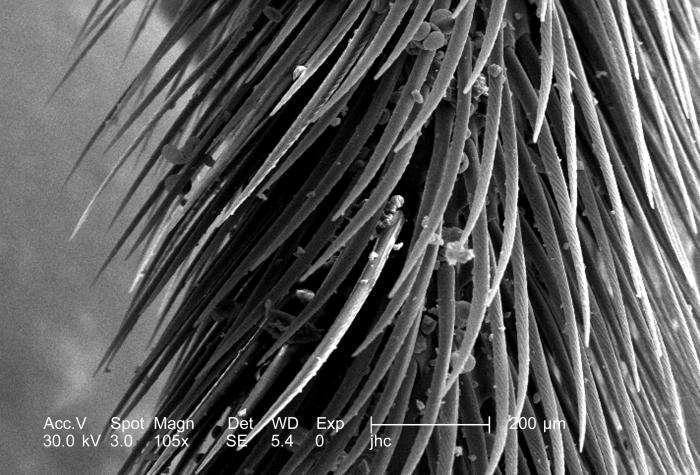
At a low magnification of 105x, this scanning electron micrograph (SEM) depicted some of the morphologic details found on one of the legs of a carpenter bee, Xylocopa virginica. This particular bee was found deceased on the grounds of the Decatur, Georgia suburbs, an area where these insects are quite common.